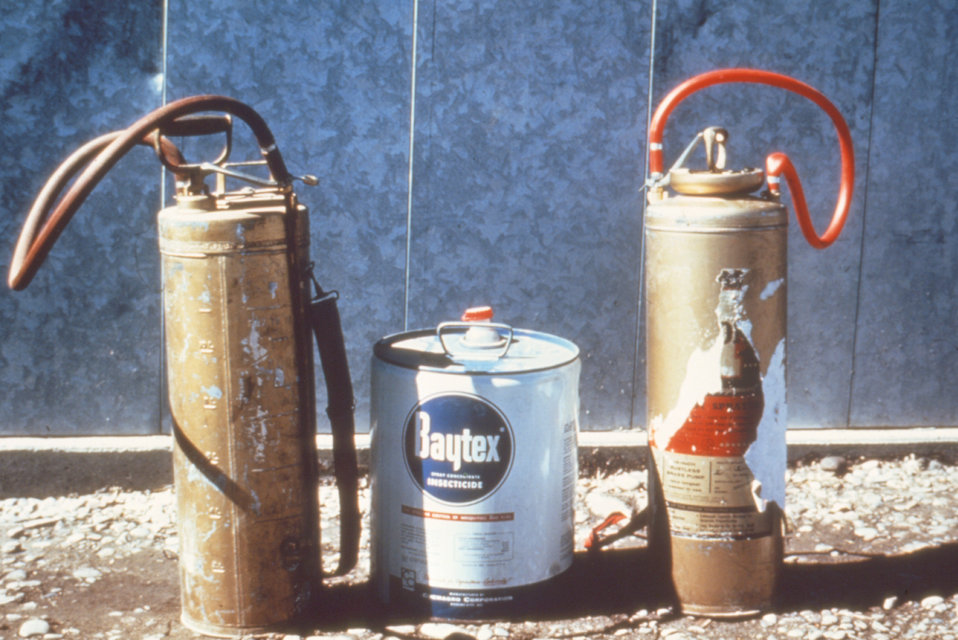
This 1981 photograph shows some of the hand-held equipment used in environmental mosquito control procedures.